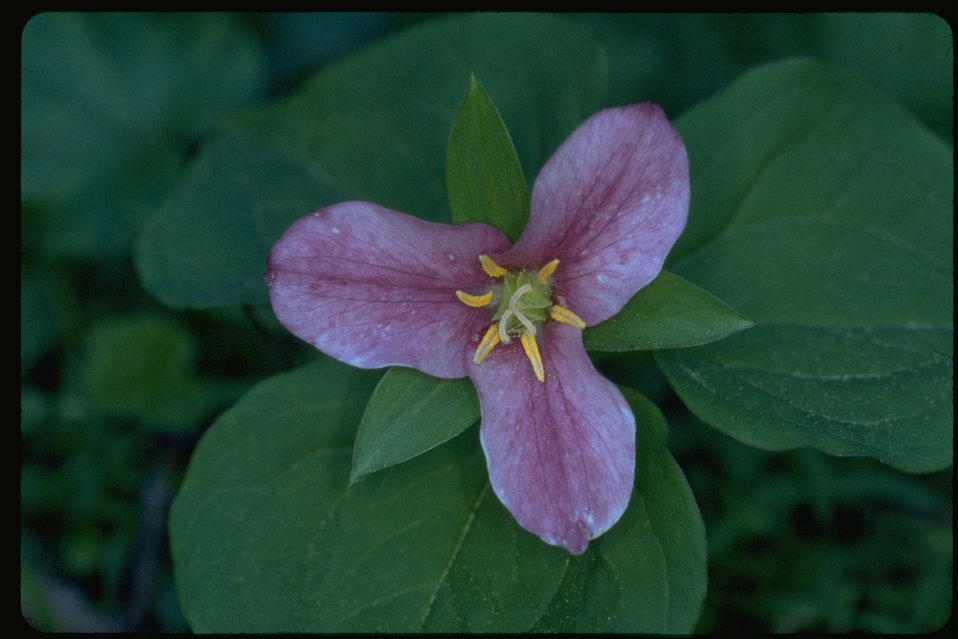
Close up shot of purple Trillium.